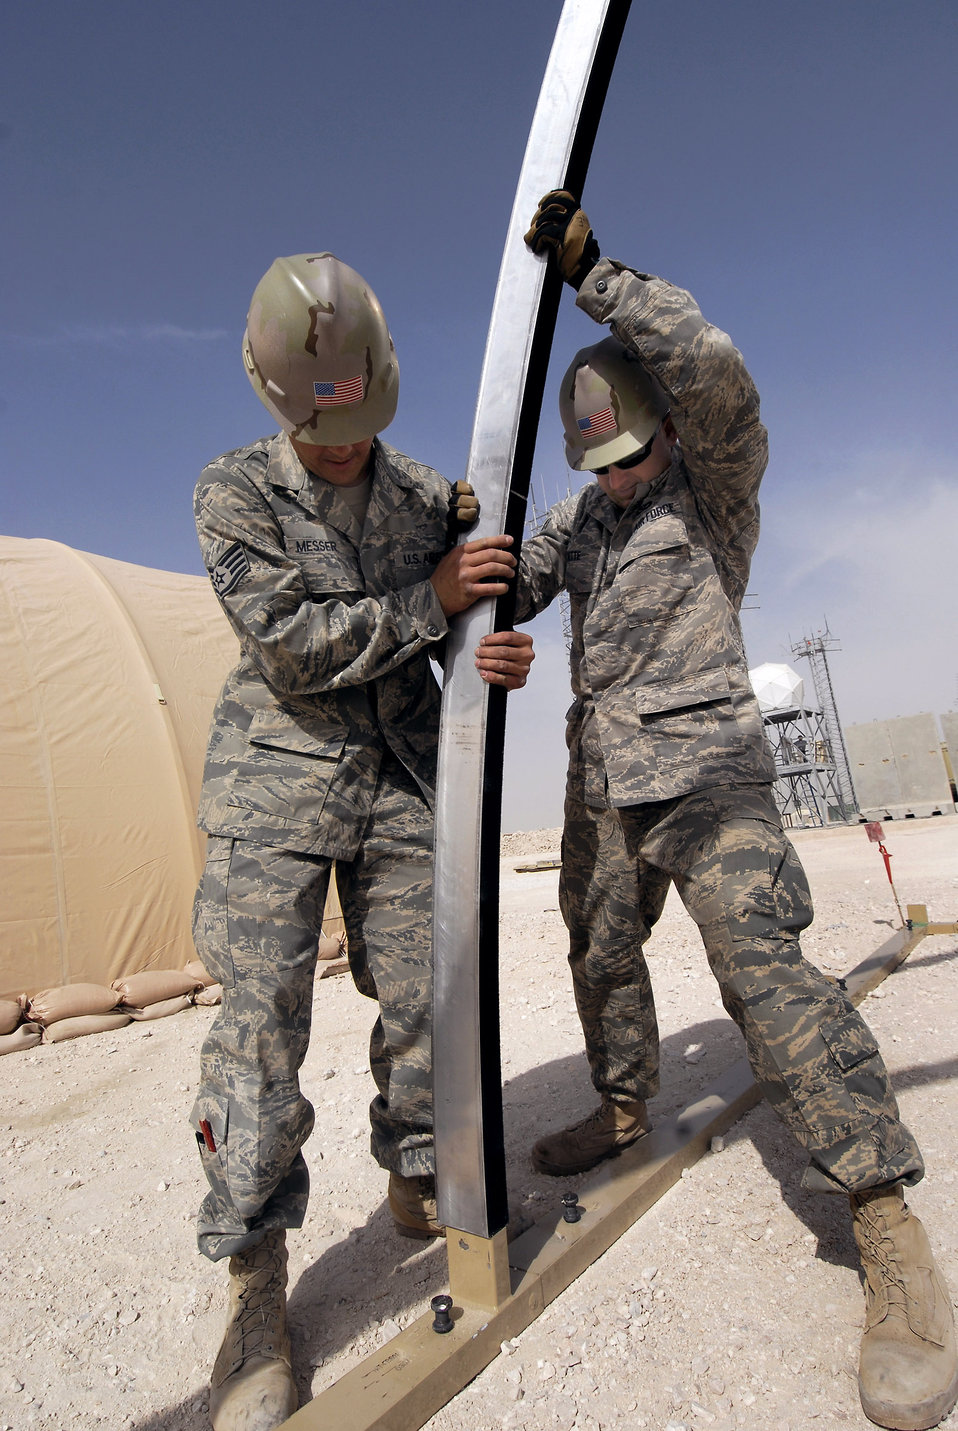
Raising the roof

Staff Sgt James Messer (left) and Senior Airman Geoffrey Witte work an arch into the base of a California Medium Shelter System Feb. 17 used to house Airmen at an air base in Southwest Asia. The Airmen are structural craftsmen with the 379th Expeditionary Civil Engineer Squadron. Staff Sgt. Messer, from Murphy, N.C., is deployed from Scott Air Force Base, Ill. Airman Witte, from Anadarko, Okla., is deployed from Vandenberg AFB, Calif.